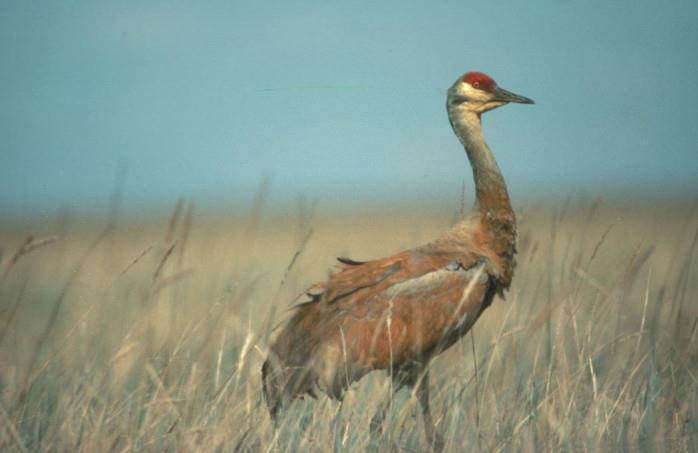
Sandhill crane

Ottawa National Wildlife Refuge/USFWS